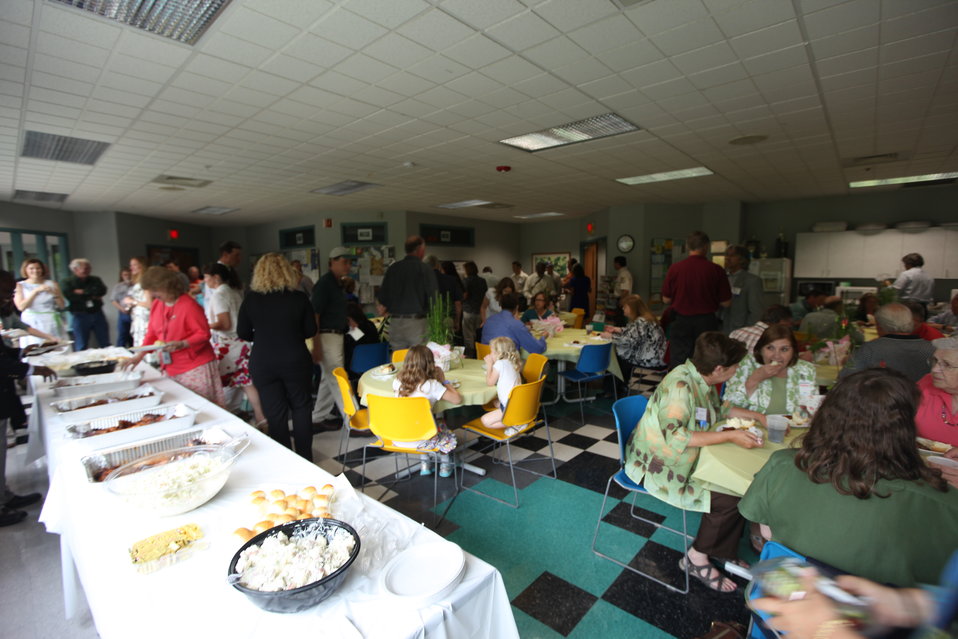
Northeast Region Employee Appreciation Awards

Luncheon